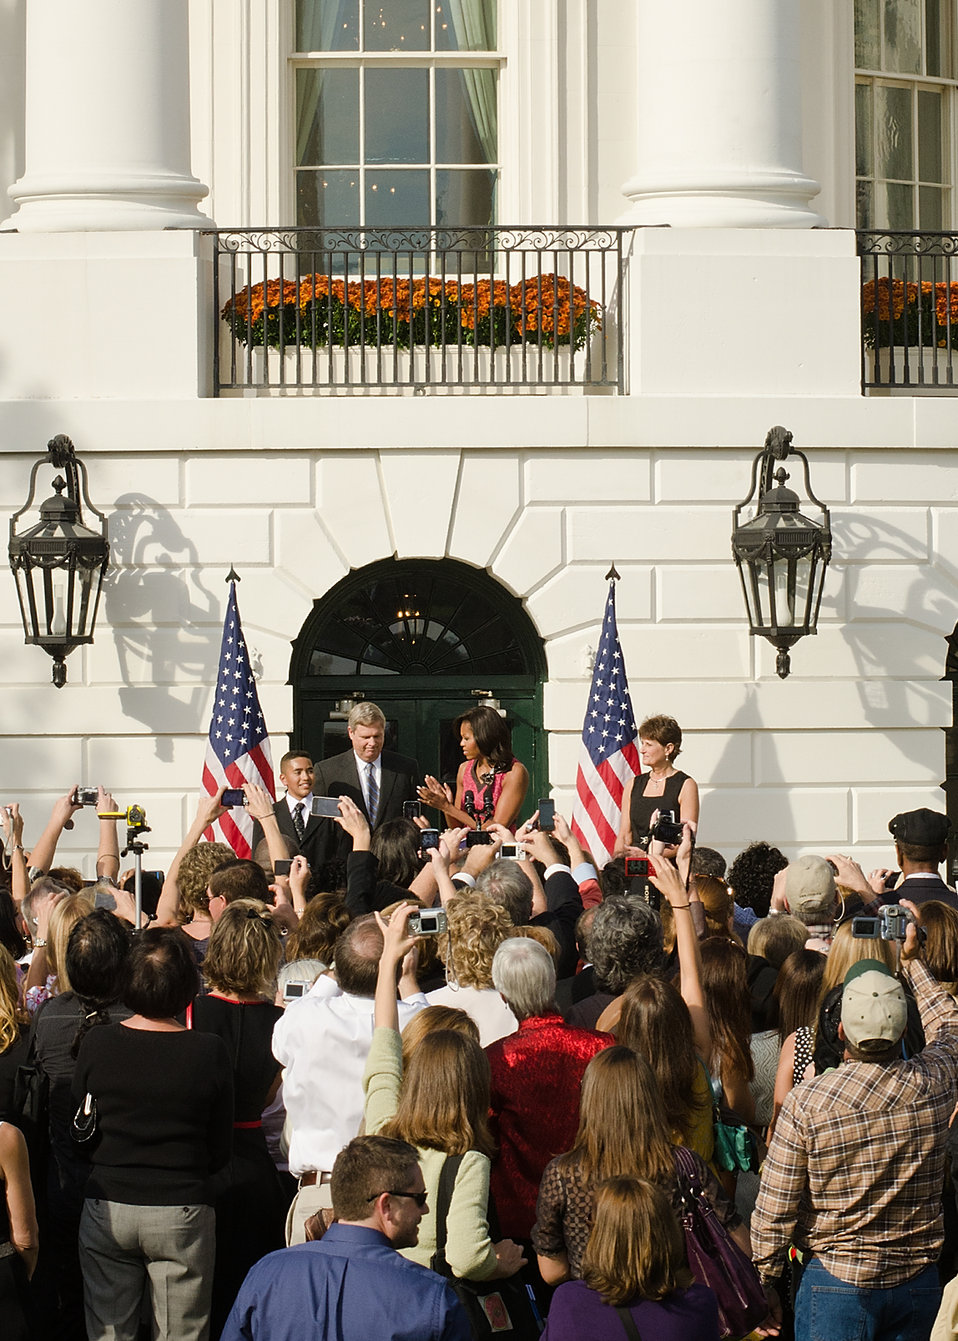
First Lady Michelle Obama applauds her introduction by Alex Roman, Walsh Elementary School Chicago, Illinois at a reception on the South Lawn of the White House in Washington, DC, on Monday, October 17, 2011 to honor the winners of the HealthierUS Schools Challenge. Behind the First Lady from left: are Roman, Agriculture Secretary Tom Vilsack, and Becky Bounds, Lamar County Schools, Mississippi. Secretary Vilsack and the First Lady hosted the reception to honor the over 1200 winners in the HealthierUS Schools Challenge that met the First Lady’s goal to double the number of participants in the HealthierUS School Challenge in a year. In February 2010, First Lady Michelle Obama introduced “Let’s Move” incorporating the HealthierUS School Challenge into her campaign to promote a healthier generation of children. The HealthierUS School Challenge recognizes elementary, middle and high schools nationwide that create healthier school environments by providing exceptional nutrition education, nutritious food and beverage choices, physical education and opportunities for physical activity. Since the beginning of the HealthierUS School Challenge in 2004, awards have been given to schools in 44 states. As of September 28, 2011, there are 1631 schools certified. A tool kit on how to become a Healthier U.S. School can be found at www.fns.usda.gov.